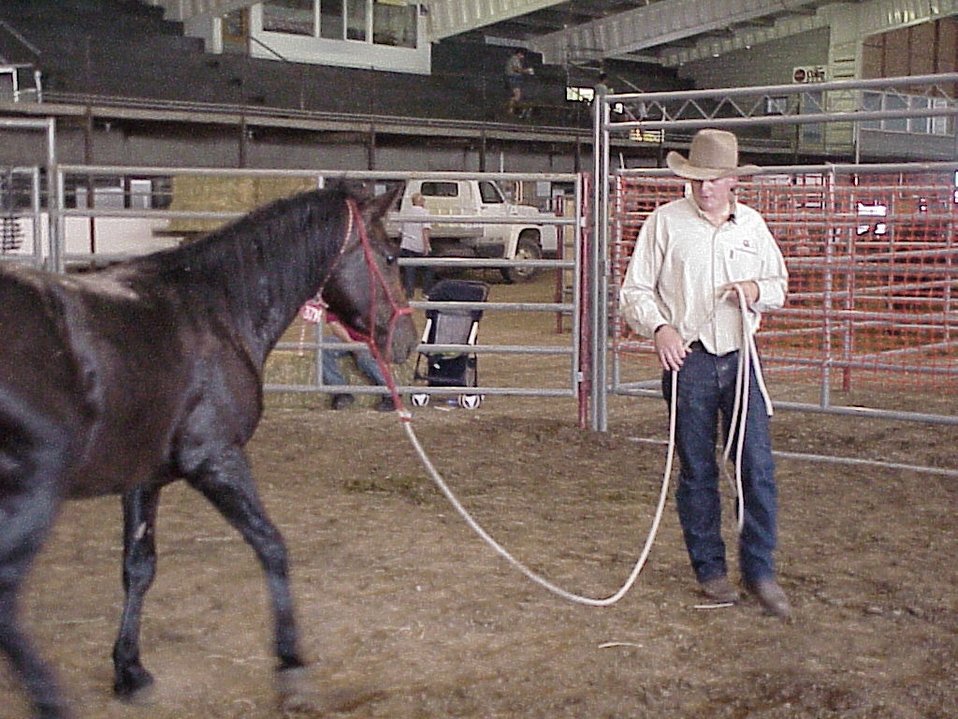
Horse Gentler Mario Johnson Lewiston Wild Horse and Burro Adoption Program Auction WHB indoor auction Cottonwood Field Office UCSC Upper Columbia Salmon Clearwater District